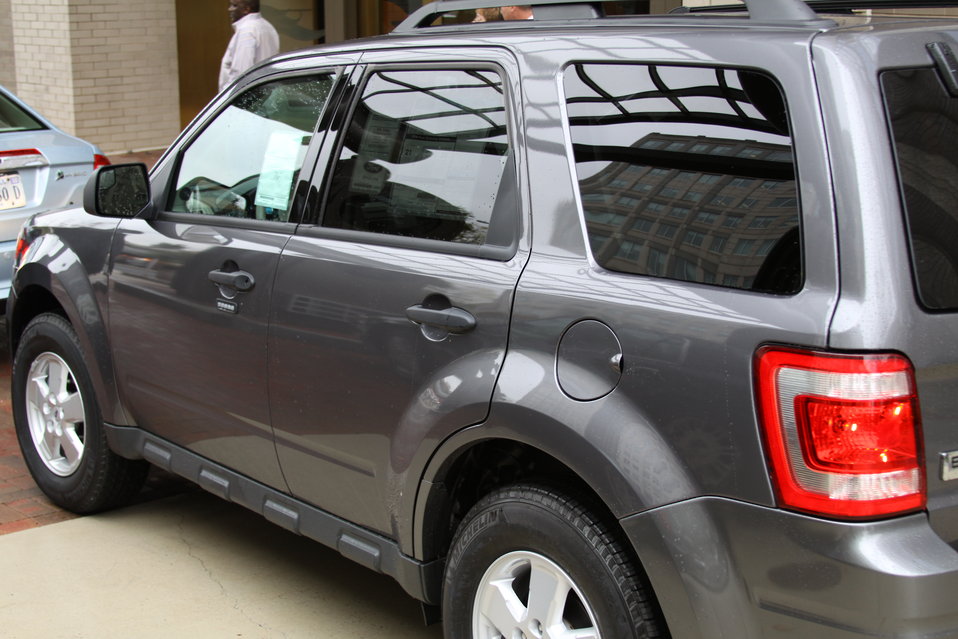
FCC Official Vehicle Tour